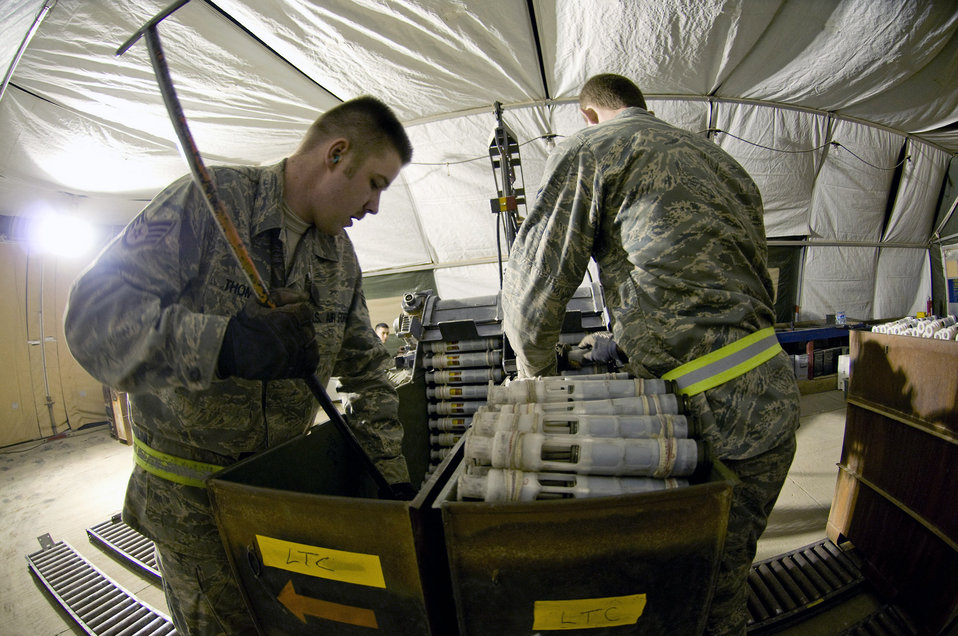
Feeding the Thunderbolt II

Airman 1st Class Jeb Snow (right) feeds linked tube carriers into a GFU-7